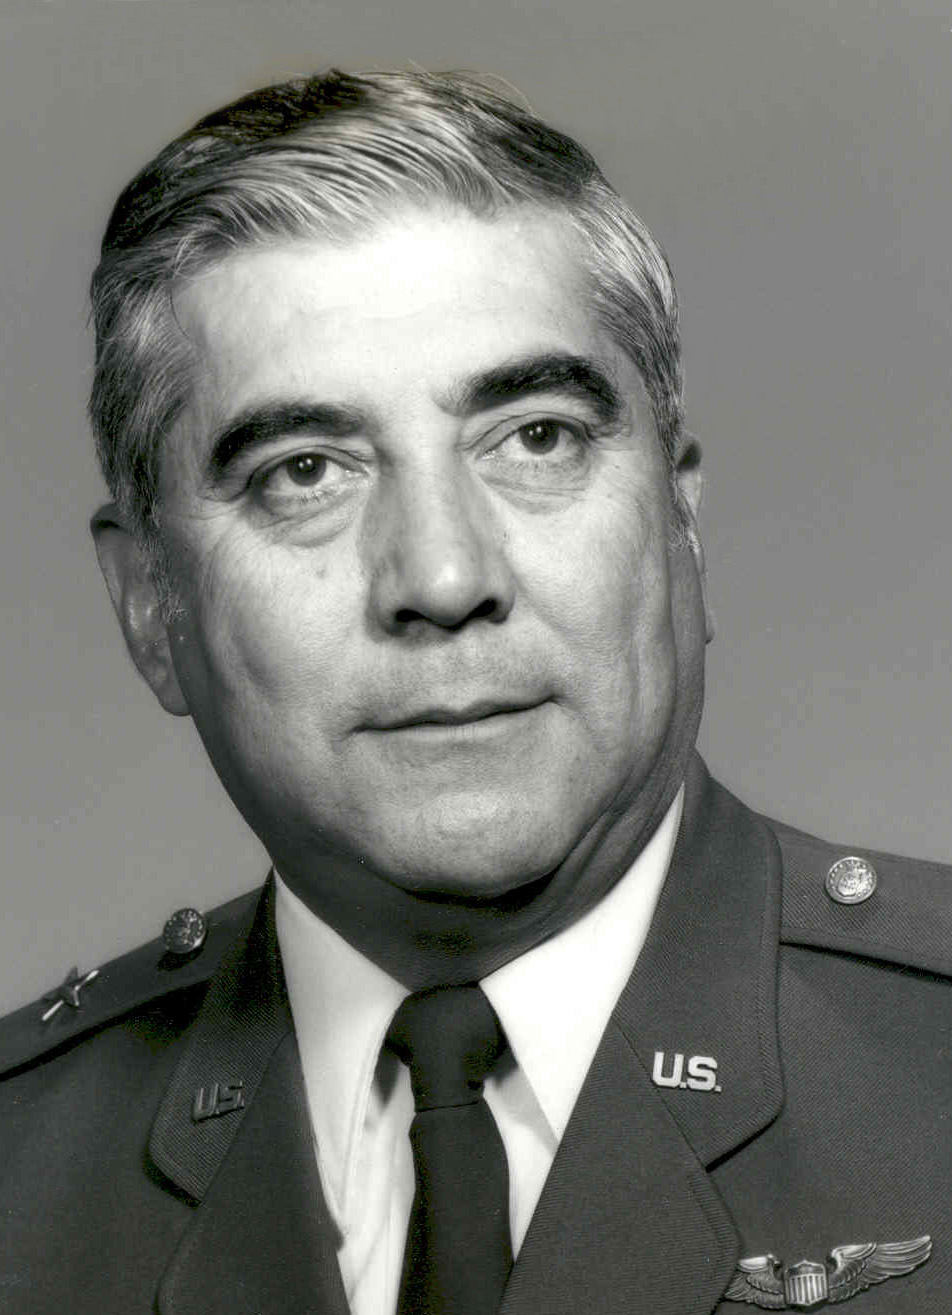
Air Force maintenance icon dies

Retired Lt. Gen. Leo Marquez passed away Dec. 30, 2011, in Albuquerque, N.M., at age 79. He retired in 1987 as the deputy chief of staff for logistics and engineering at Headquarters U.S. Air Force, Washington, D.C.